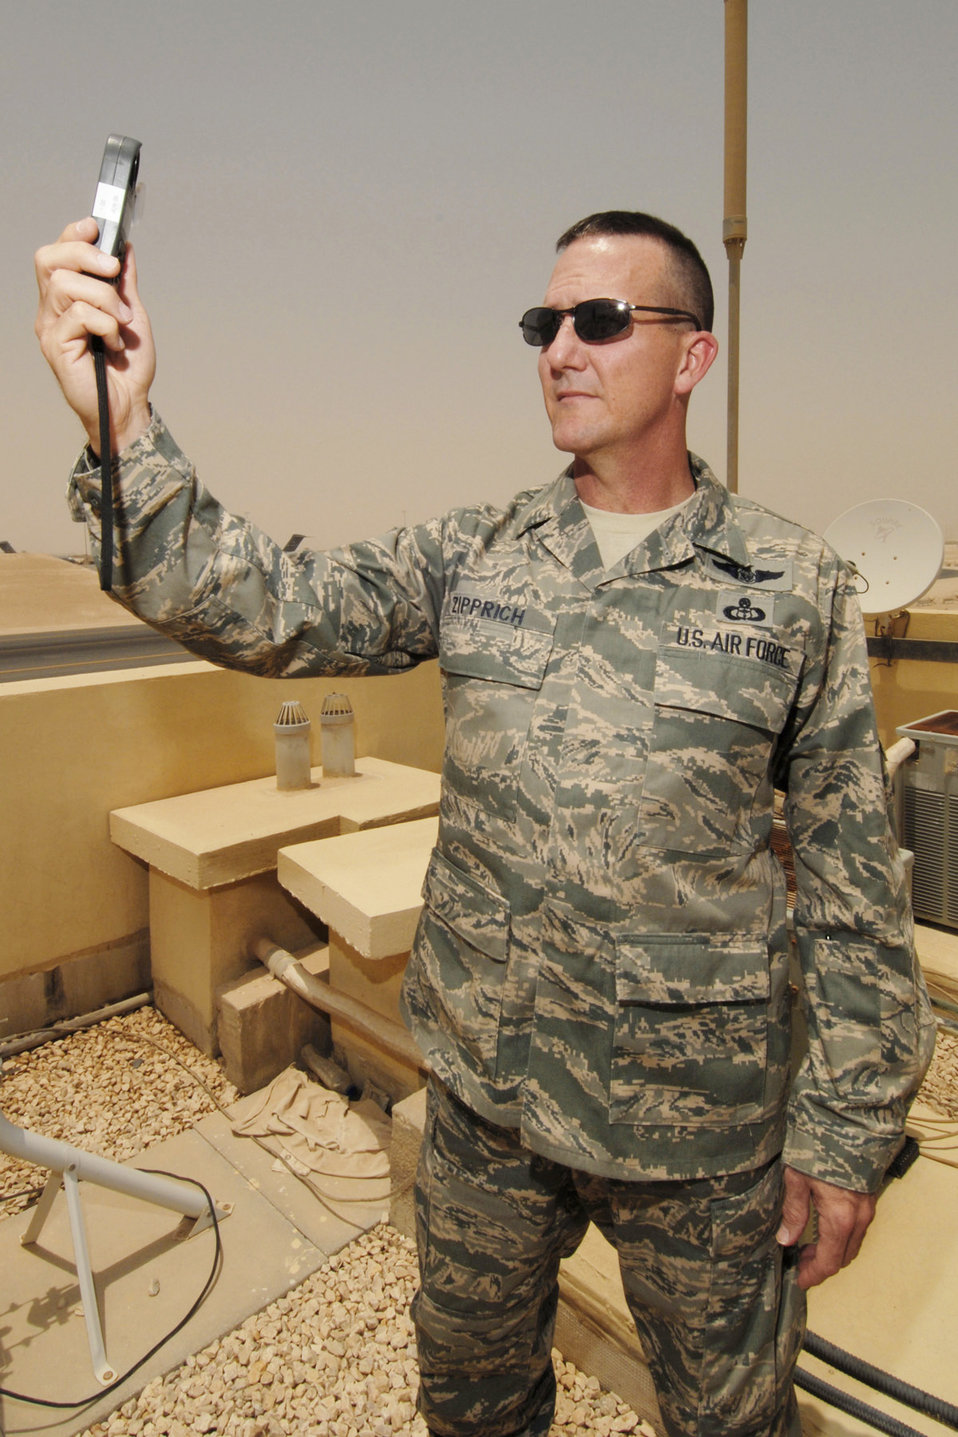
Watching the weather

Senior Master Sgt. Tom Zipprich, the 379th Expeditionary Operations Support Squadron Weather Flight superintendent at an air base in Southwest Asia, records a tactical weather observation July 13 using a Kestrel hand held-weather observation device. The forecasters provide around-the-clock weather service in support of coalition ground and air forces in Southwest Asia. Sergeant Zipprich is deployed from Dyess Air Force Base, Texas.